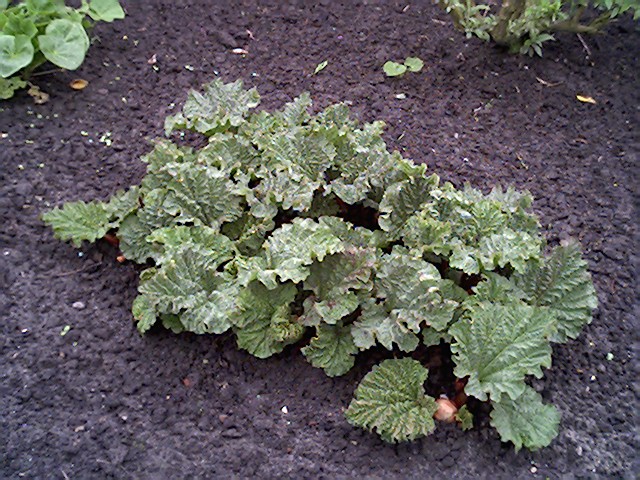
Rabarber. Serie foto's van een rabarberplant van 25 maart 2005 tot en met 13 mei 2005, één foto per week. Bestandsnamen: Rabarber-serie-1.jpg tot Rabarber-serie-8.jpg. Foto zelf gemaakt.